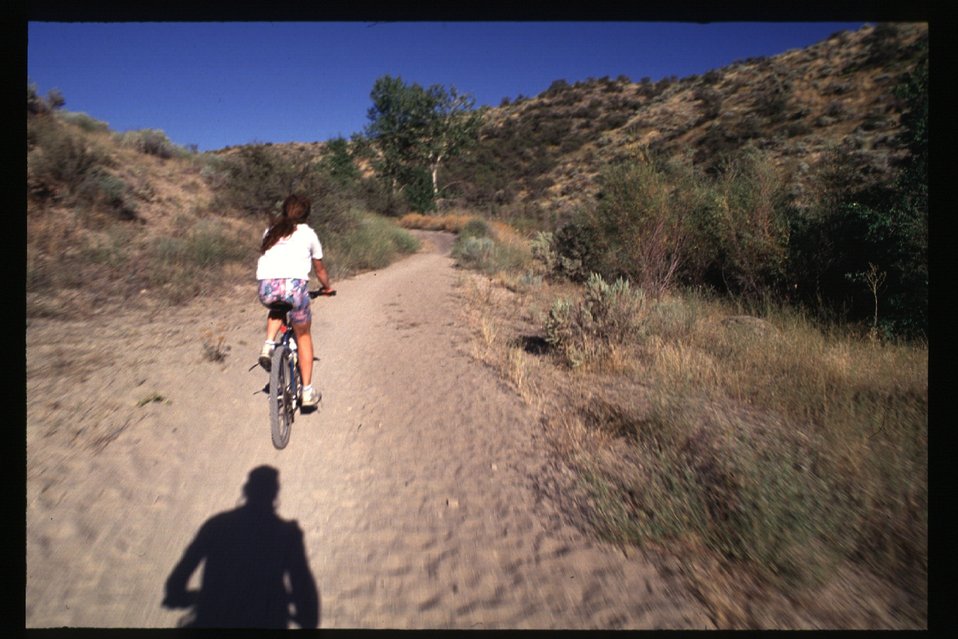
Recreation Scenic Biker Shoshone Field Office USRD Upper Snake River District